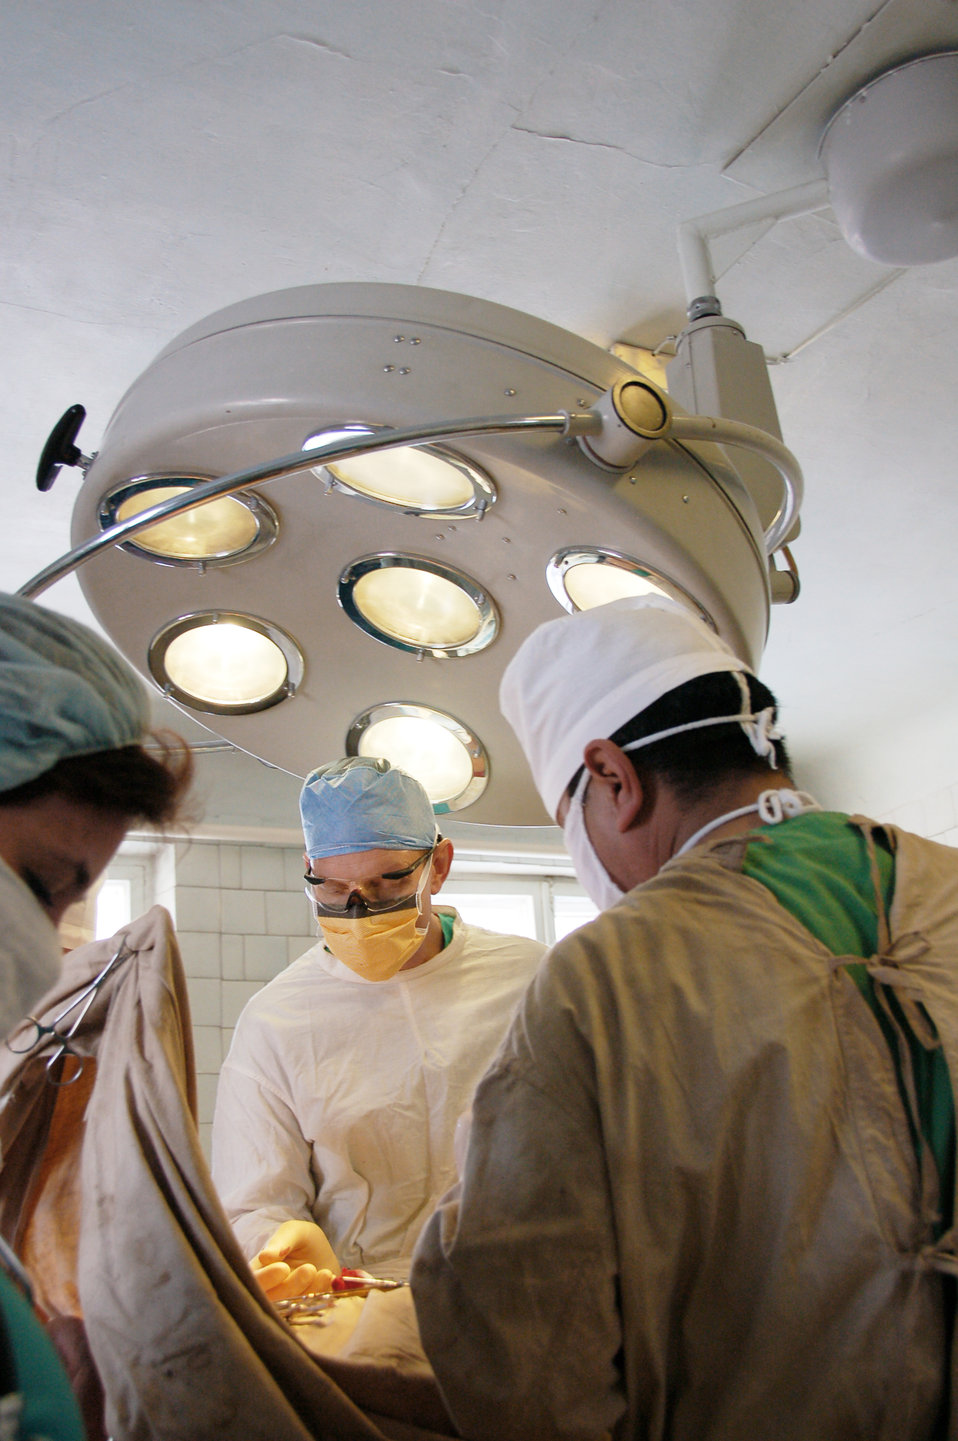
Airmen perform operations with Kyrgyz surgeons

Lt. Col. (Dr.) Joseph Browne assists in performing a surgical operation with a Kyrgyz surgeon during a joint medical operation at a Kyrgyz Republic military hospital Dec. 11, 2009. A team of Airmen visited the hospital and performed two separate procedures. The joint operations were part of an ongoing partnership between medical Airmen at the Transit Center at Manas, Kyrgyzstan, and their counterparts at the Besh-Kungei Military Hospital. Doctor Browne is with the 376th Expeditionary Medical Group at the Transit Center at Manas.